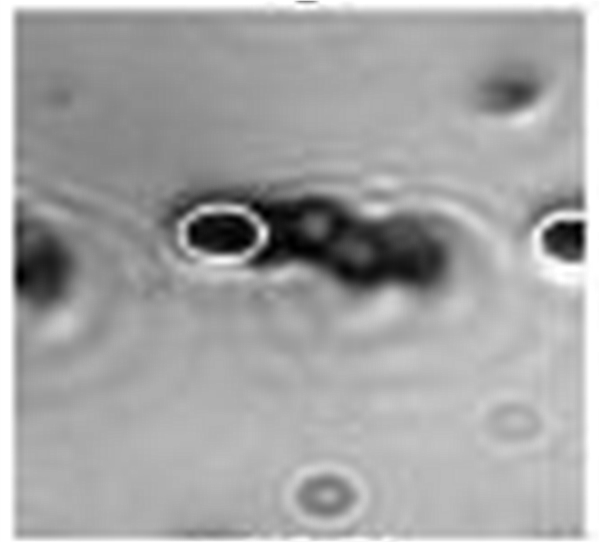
Biomolecules; Magnetic Computer Sensors

This video micrograph shows a strand of magnetic particles trapped by a 'spin valve' (highlighted in white) and rotated by the application of an external rotating magnetic field. NIST is studying the possible use of spin valves arrays for parallel processing of biological molecules.